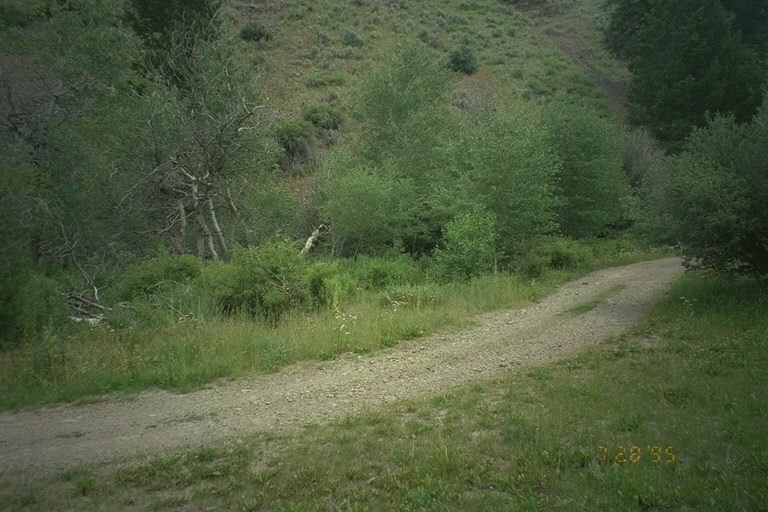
Riparian area Public Lands Salmon Field Office UCSC Upper Columbia Salmon Clearwater District